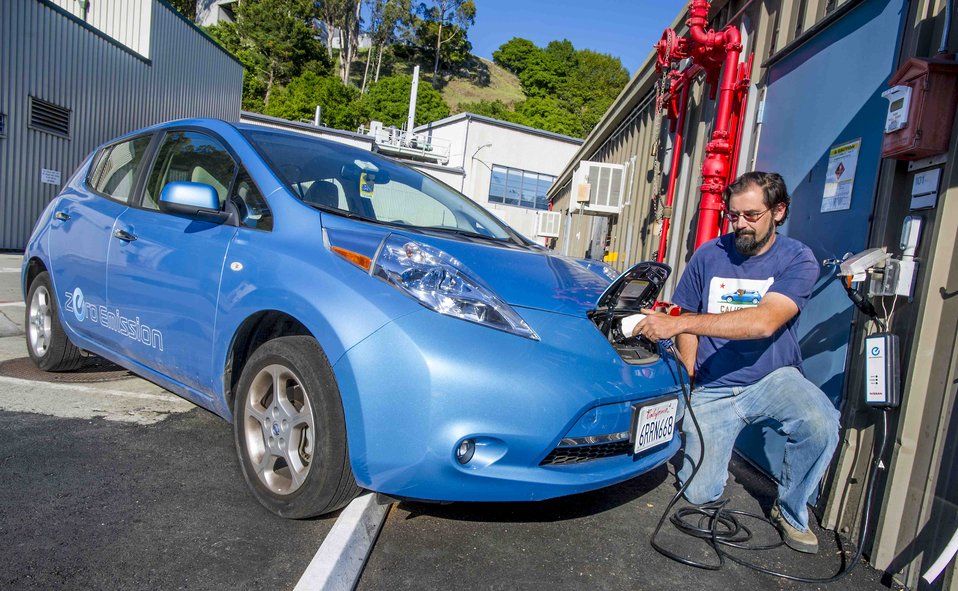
Lawrence Berkeley National Laboratory scientist and electric vehicle owner tries out a charging station that will be available to permitted employees for EV charging.